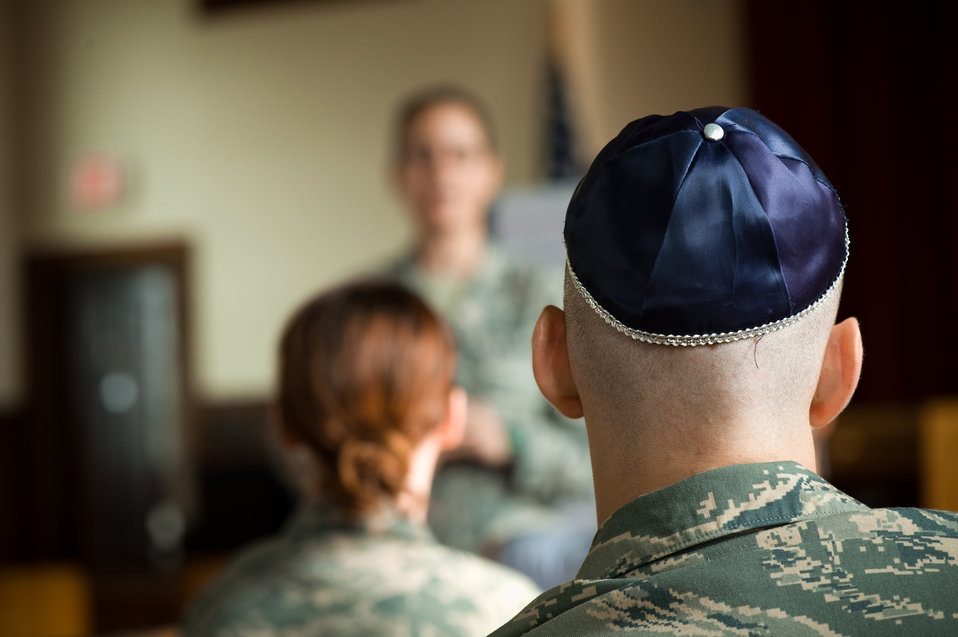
U.S. Air Force Chaplaincy

Trainees Eric Smith (right wearing the kippah, religious head covering) and Cassandra Bridges( left) listen to U.S. Air Force Rabbi, Chaplain, Captain Sarah D. Schechter leading the evening le'il shabbat service on Friday, Sept. 4, 2009 at Lackland Air Force Base's Airmen Memorial Chapel. The more than 25 basic military trainees and other attendees participated in a religious education class, then Ma'ariv prayer service for the setting of the sun, followed by a meal provided by lay leaders supporting the service. Because of training schedules some ceremonies and events are earlier than traditionally held. By order of commanders, those who want to attend any or all religious services of their choosing are given full permission and opportunity to do so.